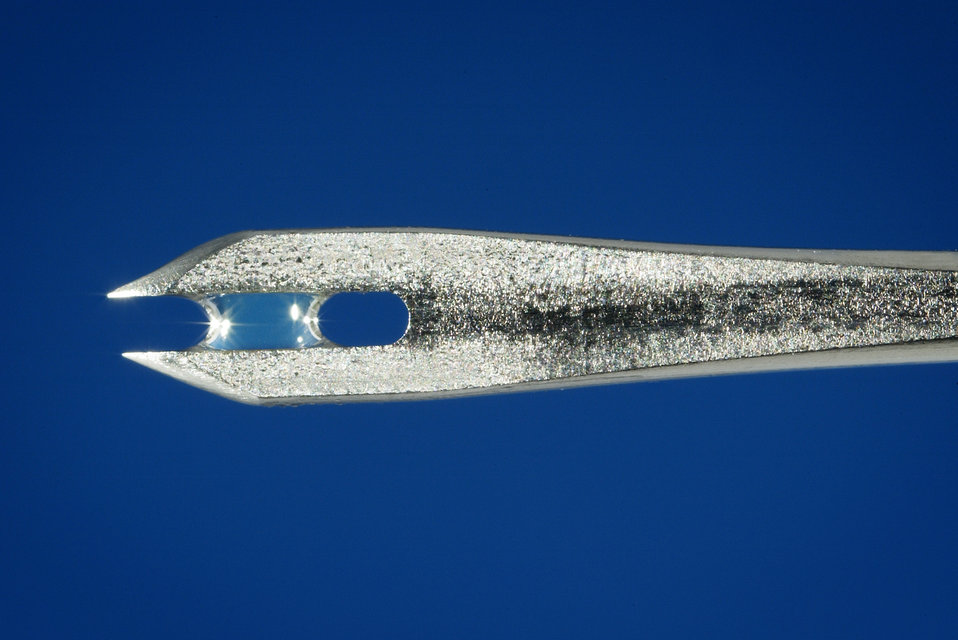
A close-up of the tip of a bifurcated needle used to vaccinate individuals containing some vaccine solution.